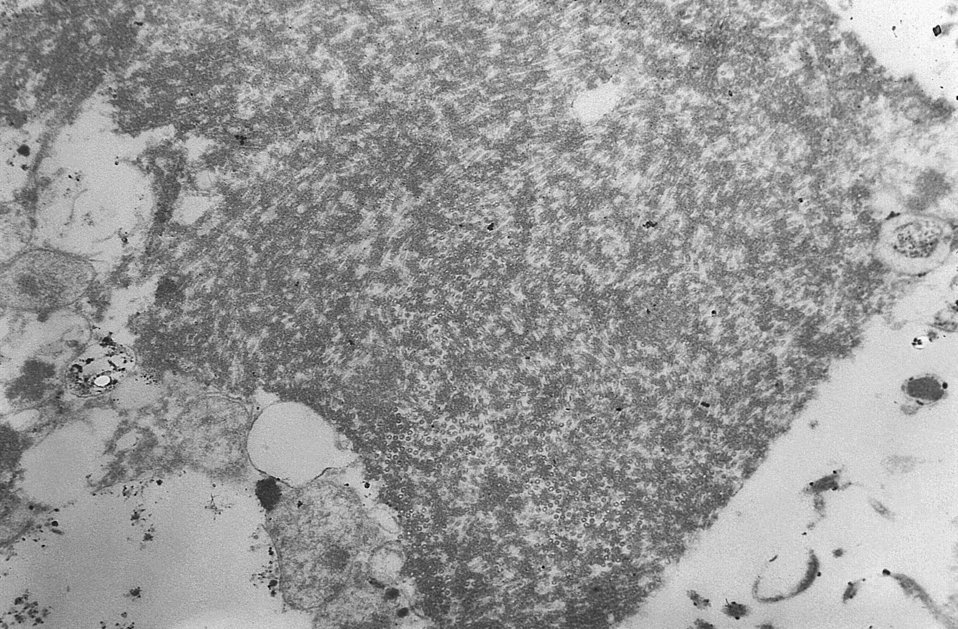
This electron micrograph shows a thin section containing the Ebola virus, the causative agent for African hemorrhagic fever.